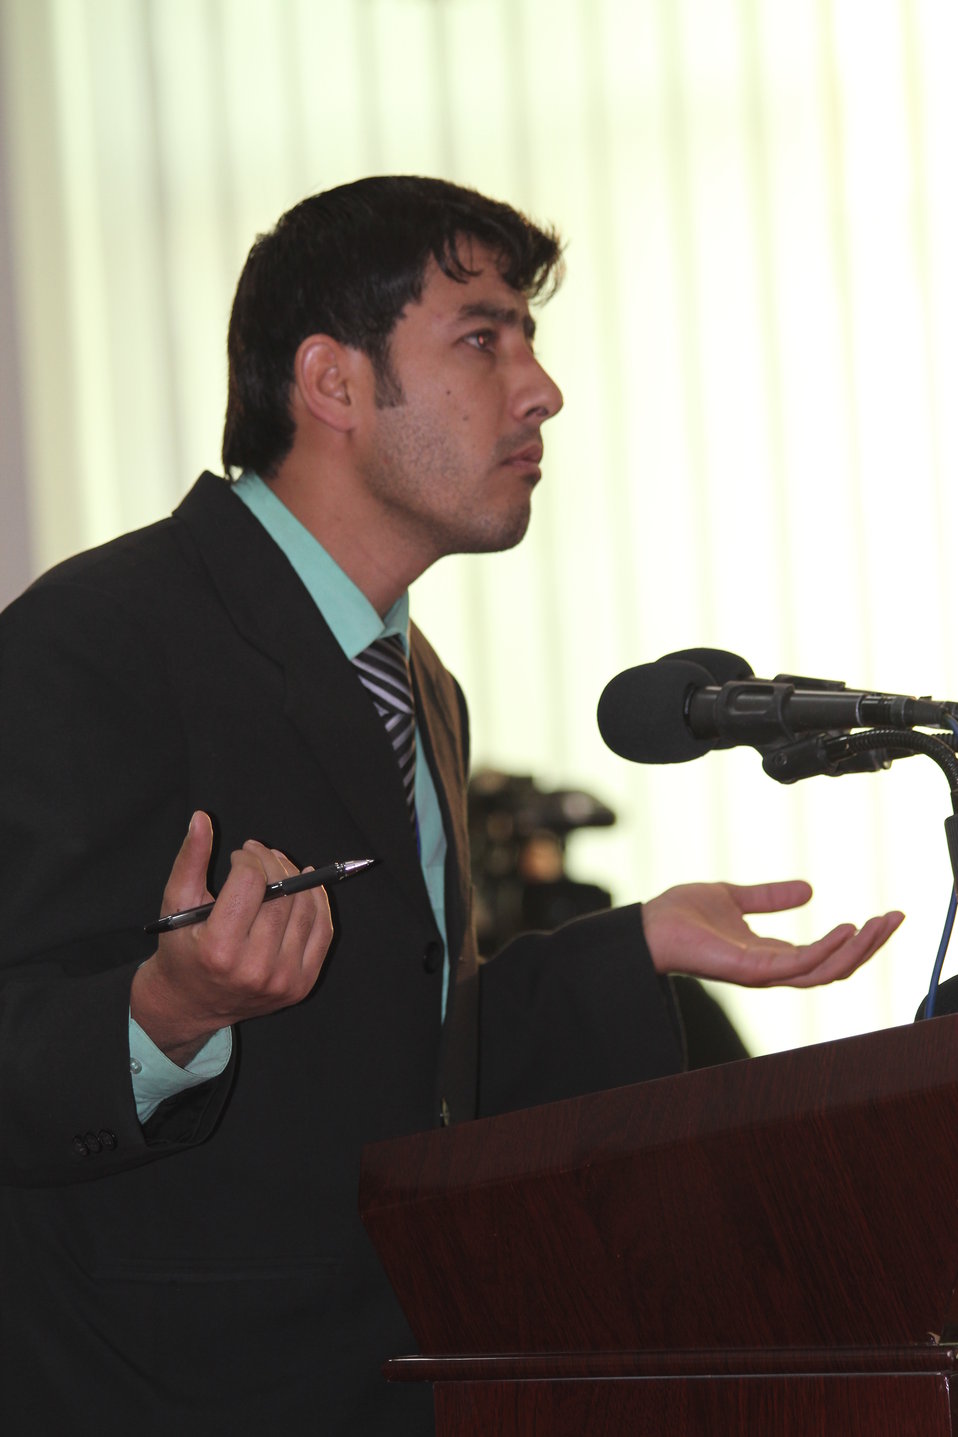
Jessup Moot Court

Al Biruni Students Presnts case at Jessup Moot Court on January 11, 2012